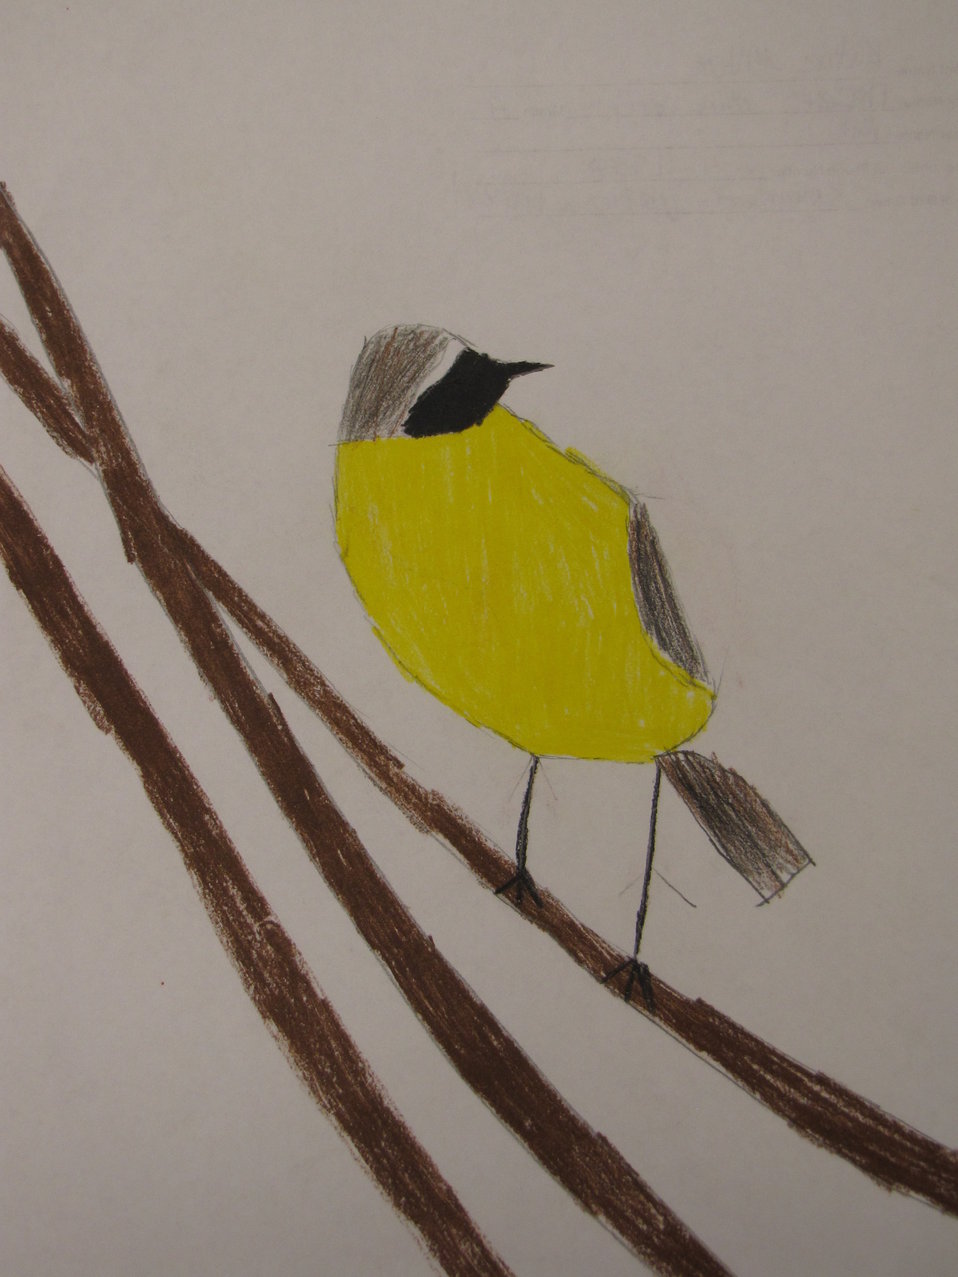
Common yellowthroat, by Katie Miller - 4th grade. One of the class winners for the annual Bird Banner competition. Community school kids draw and color migratory birds and 90 of the winners from over 1000 entries are turned into poster-sized banners to hang down main street of Brigham City this summer.